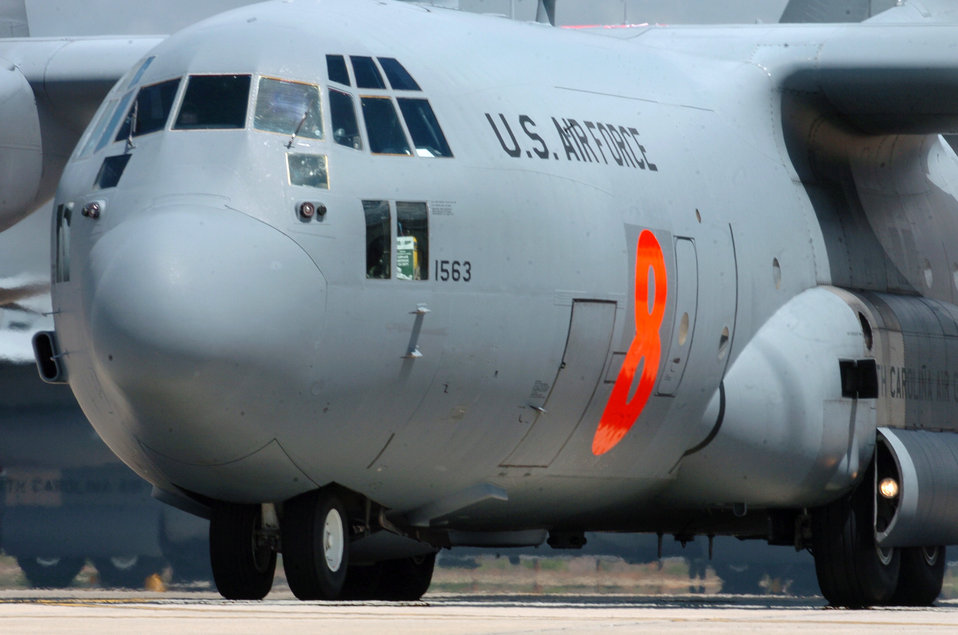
Fighting fires

A C-130 Hercules readies for takeoff at the 145th Airlift Wing in Charlotte, N.C., on Sunday, June 25. The orange number